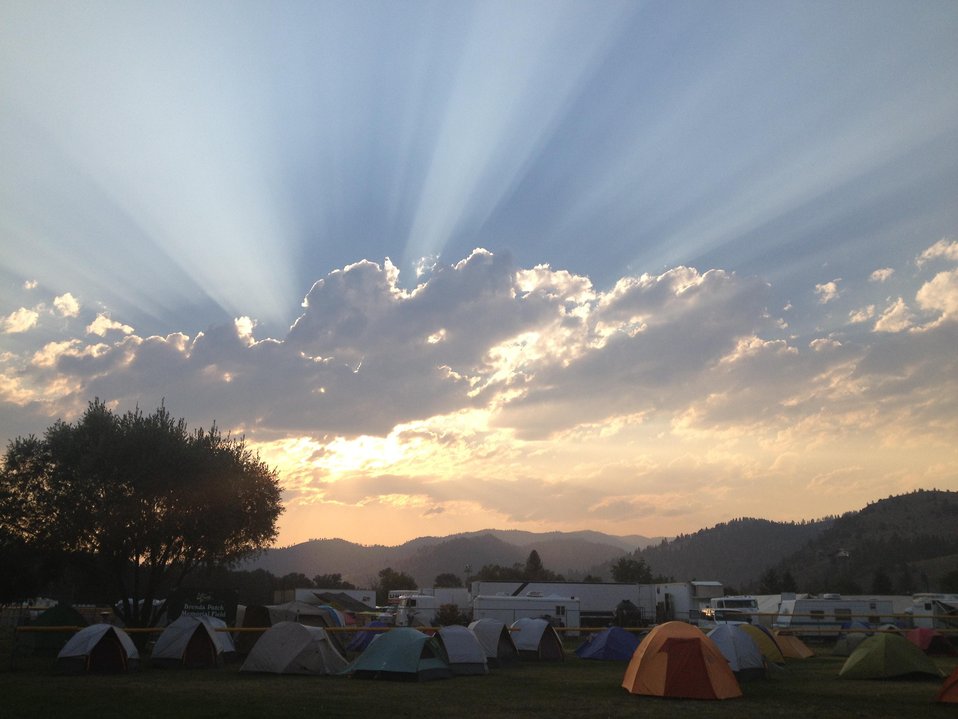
The sun sets over the sleeping area at fire camp at the Brenda Patch Memorial ball field near the Lolo Creek Fire. Tent and camping gear are provided by each firefighter. The Lolo Creek Fire in the Lolo National Forest near Lolo, MT began on Aug. 18, 2013 by lightning has consumed approximately 10,902 acres and is 60% contained.